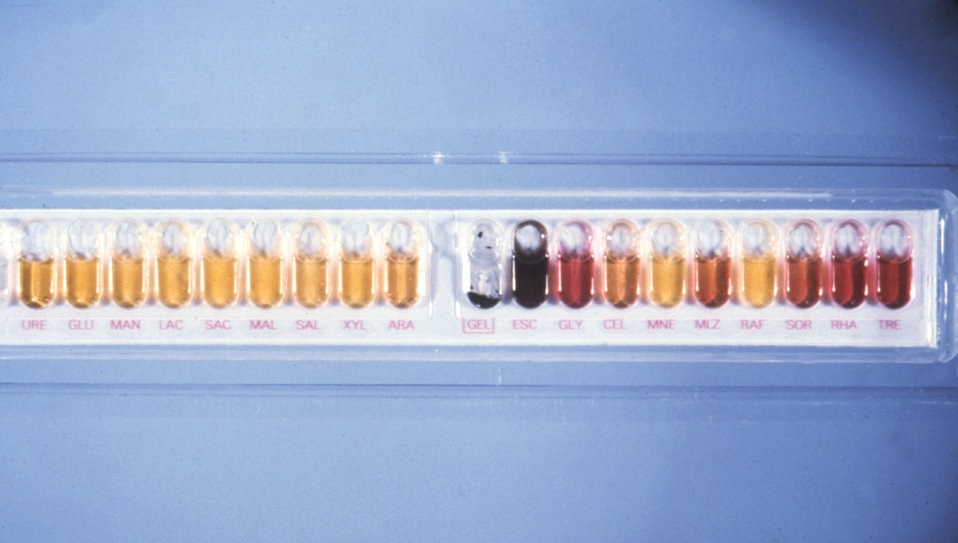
This strip of API� wells was inoculated with Bifidobacterium eriksonii, also called Actinomyces eriksonii.